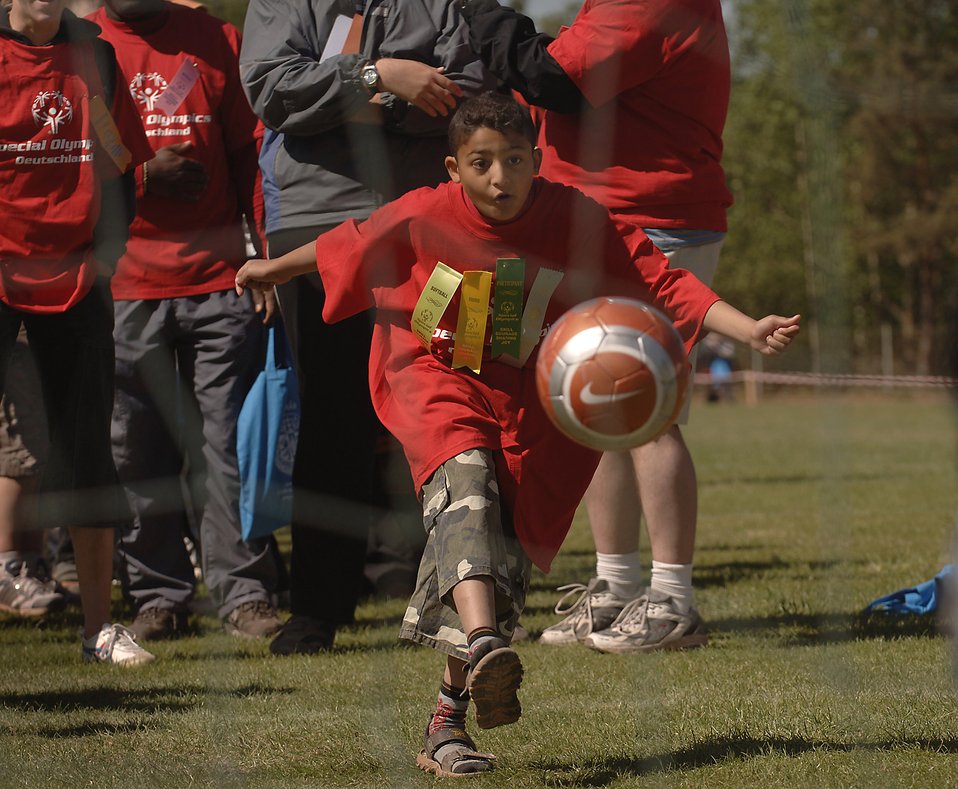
Airmen make olympics special

Stefan Gauder of Heidelberg takes a shot on goal during the 2007 Special Olympic games May 2 in Enkenbach-Alsenborn, Germany. Numerous German and American volunteers from the Kaiserslautern military community assisted more than 750 Special Olympians who competed in the 24th annual games here.